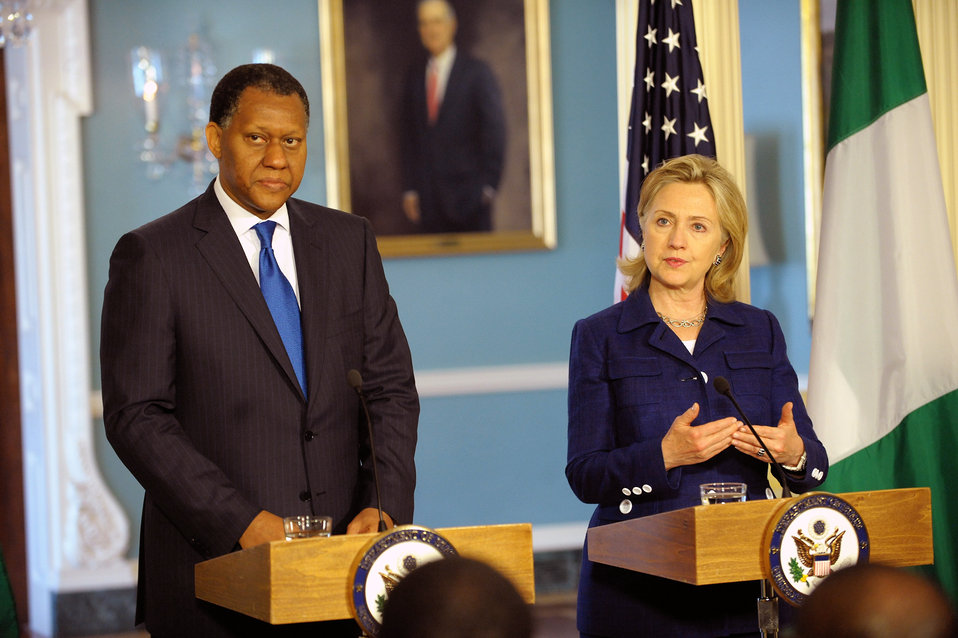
Secretary Clinton Responds to a Question

U.S. Secretary of State Hillary Rodham Clinton responds to a question at the joint press availability with Nigerian Foreign Minister Henry Odein Ajumogobia following their bilateral meeting at the U.S. Department of State in Washington, D.C., on August 5, 2010.